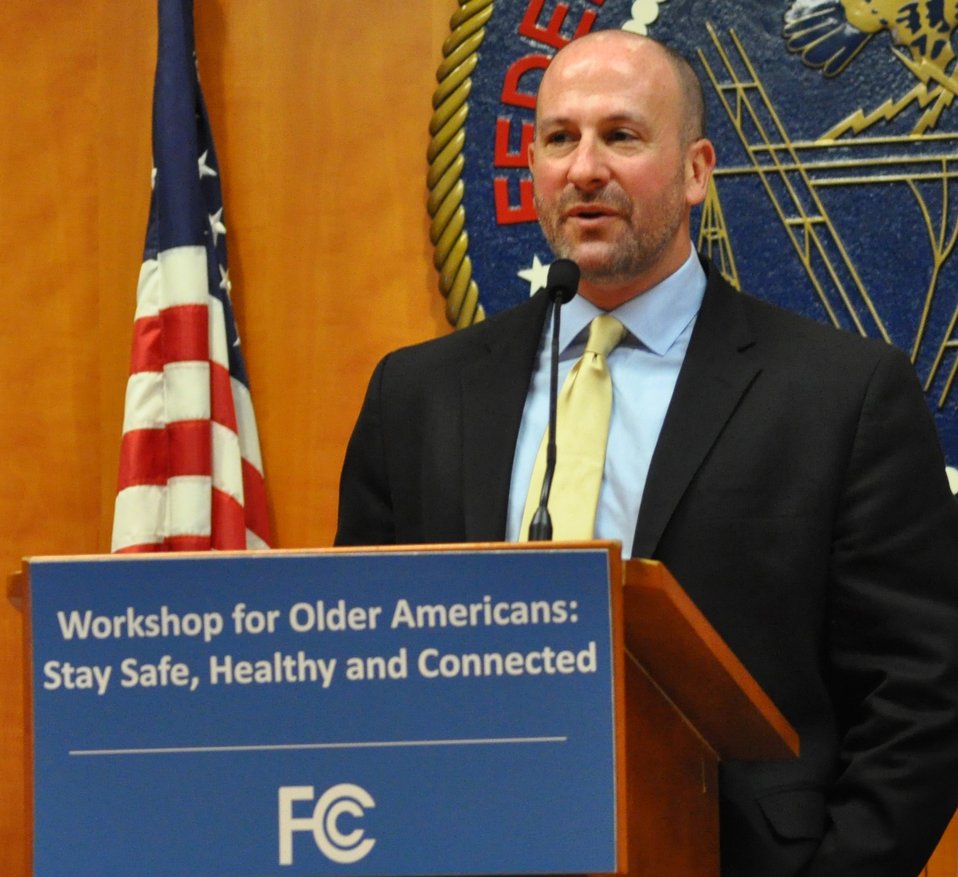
12

Tom Kamber, Older Adults Technology Services (OATS)